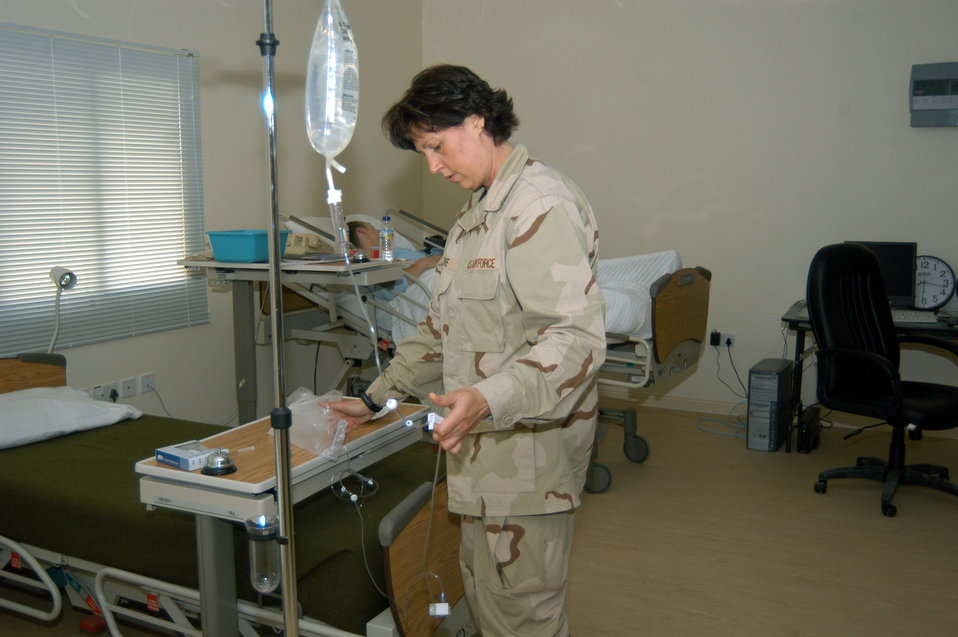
Inpatient care

SOUTHWEST ASIA -- Maj. Lori Menke sets up an IV for a patient here. Major Menke is the 379th Expeditionary Medical Group nurses inpatient element chief, and she is deployed from the South Dakota Air National Guard.